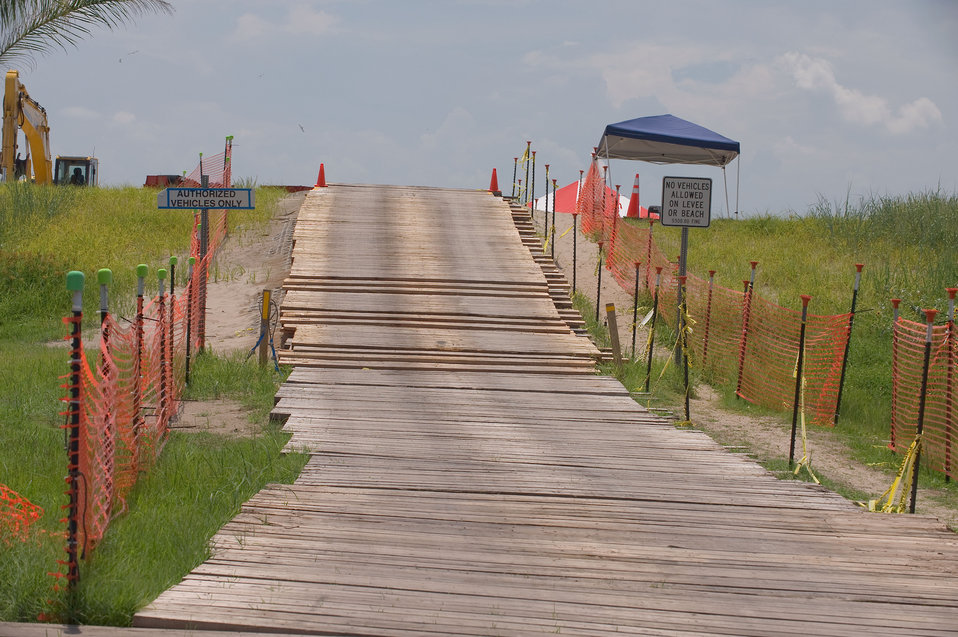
August 7, Planks protect dunes and grasses from heavy equipment

Planking protects shoreline areas from heavy equipment traffic.